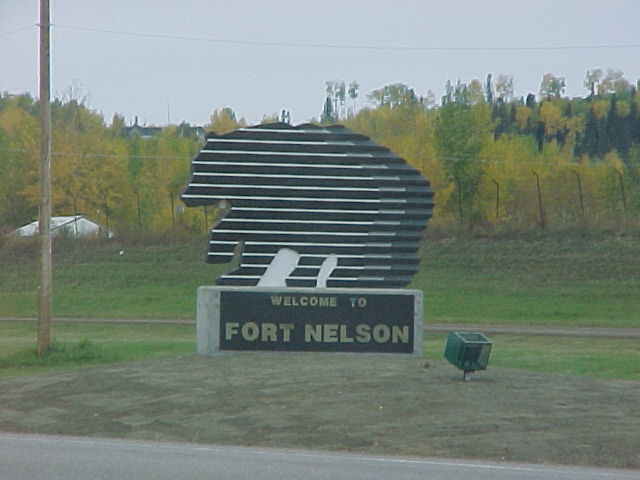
Picture of Fort Nelson, British Columbia taken on September 16, 2001.